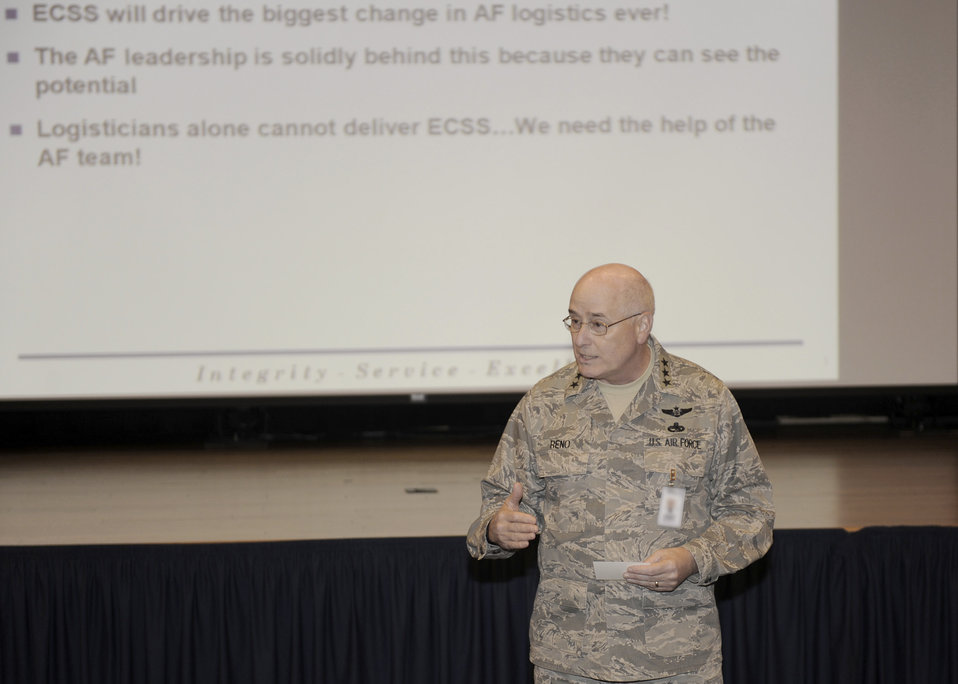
ECSS

Lt. Gen. Loren Reno, deputy chief of staff for logistics, installations and mission support, discusses the benefits of the Expeditionary Combat Support System to a group of senior Air Force leaders at the Pentagon Oct. 22, 2010. ECSS is an Air Force Logistics transformation that will provide integrated software, standardized business processes, and transformed personnel roles.